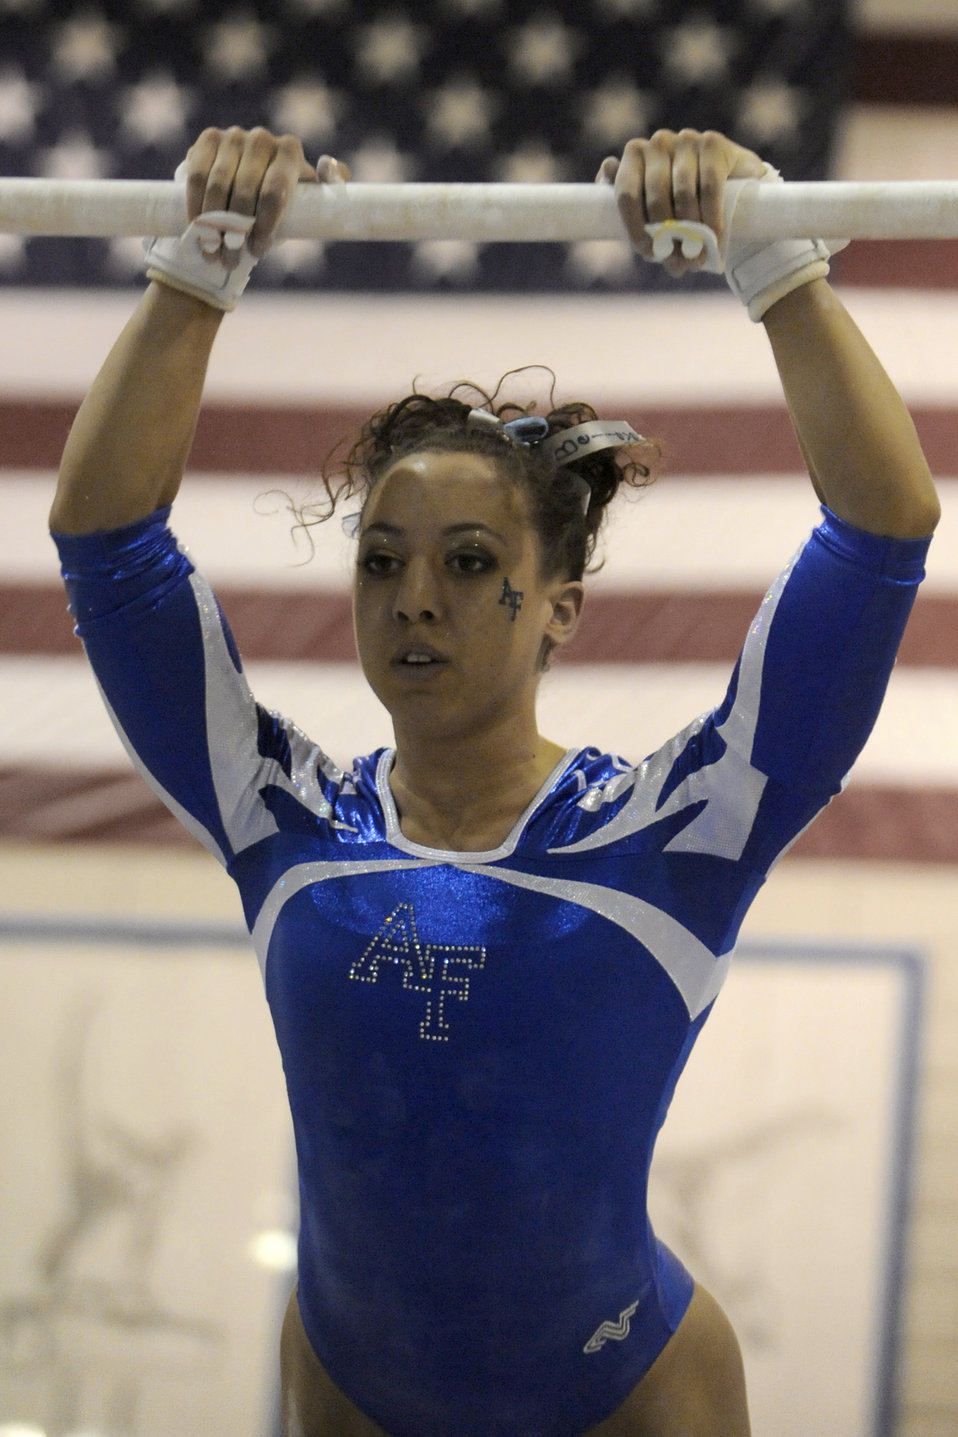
Falcon gymnasts compete against UC Davis

Falcon freshman Tara Harris competes on the uneven bars for the Air Force Academy during the meet against University of California Davis Jan. 30, 2010, in the Cadet Gymnasium. Air Force lost the meet 191.575 to 185.300 despite two event titles. Sophomore Jenna Dudley took the title in the floor exercise with a tally of 9.775, and junior Brittany Dutton took the vault title with a 9.625.